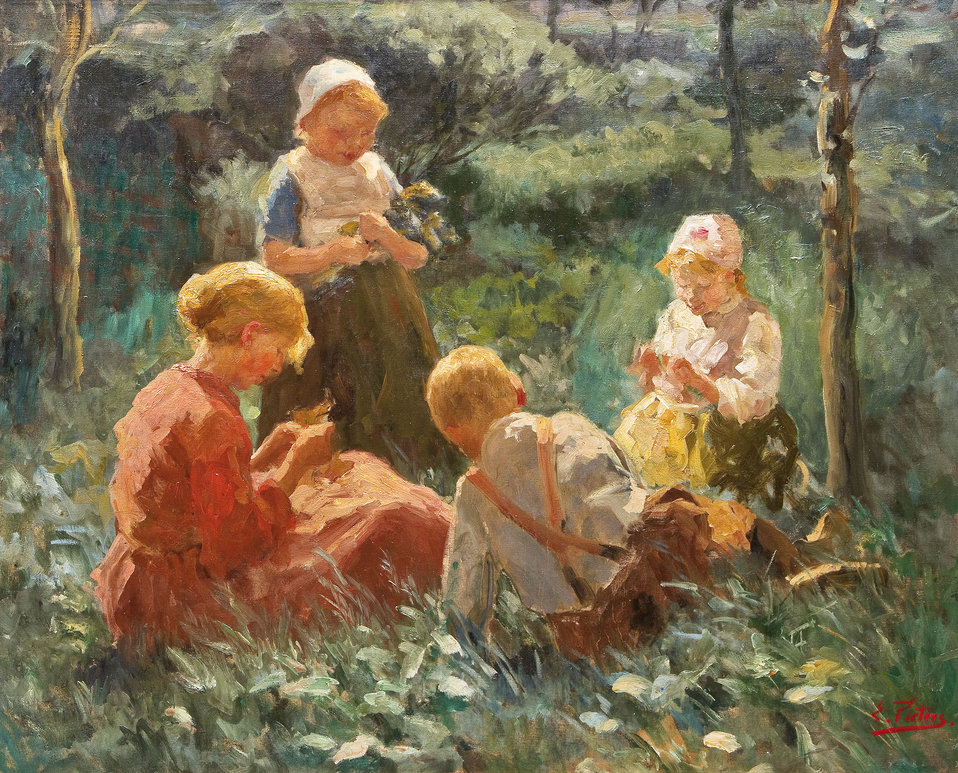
Spielende Kinder im Grünen. Öl auf Leinwand. Unten rechts signiert E. Pieters. 88 x 110 cm